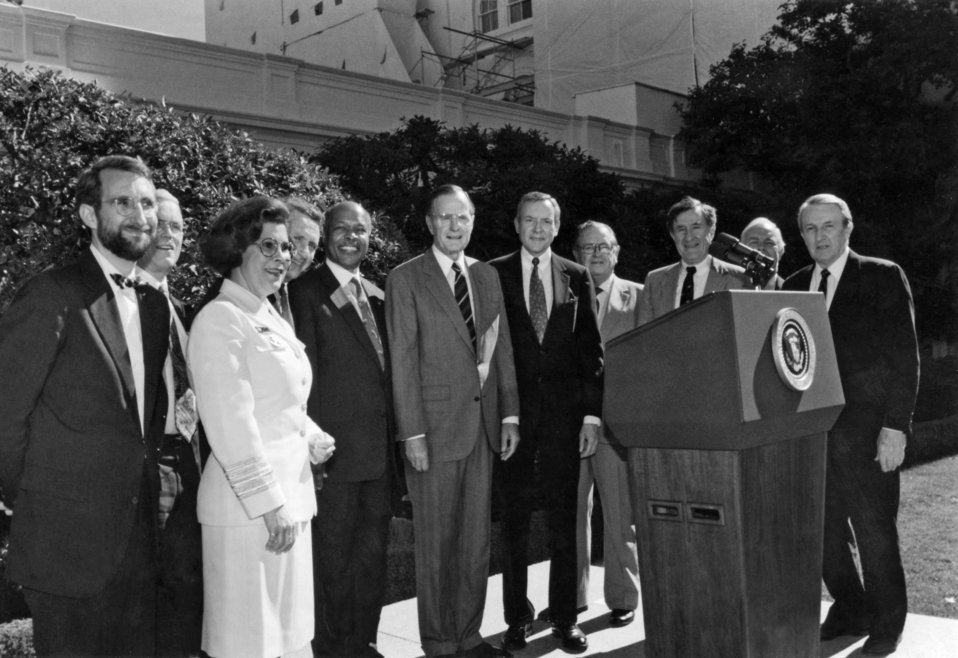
This photograph depicted a group of Centers for Disease Control officials during their visit to the White House on June 13, 1991, which took place during the George H.W. Bush (pictured center) administration.